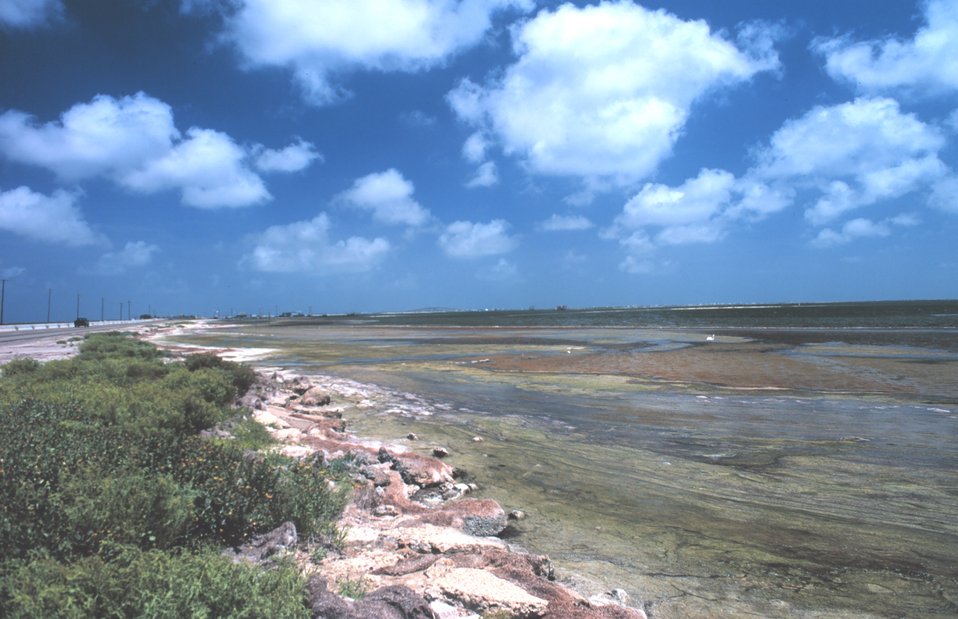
Part of Cayo del Oso Creek which empties into Corpus Christi Bay